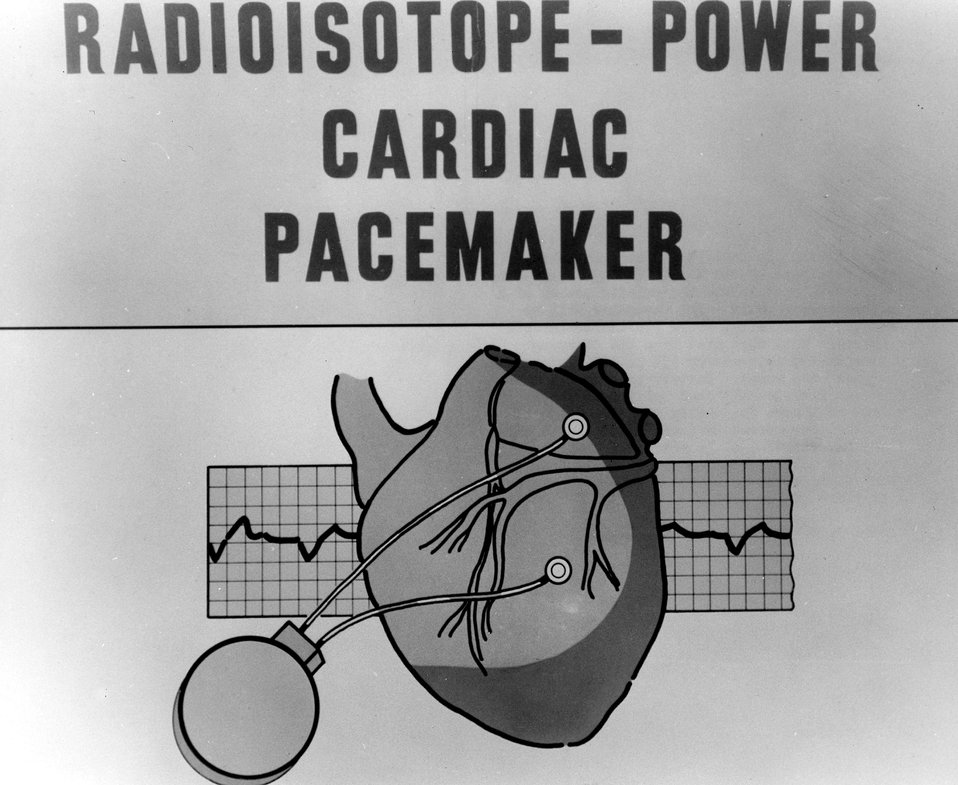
This radioisotope-powered cardiac pacemaker being developed by the Atomic Energy Commission, is planned to stimulate the pulsing action of a malfunctioning heart. Circa 1967.